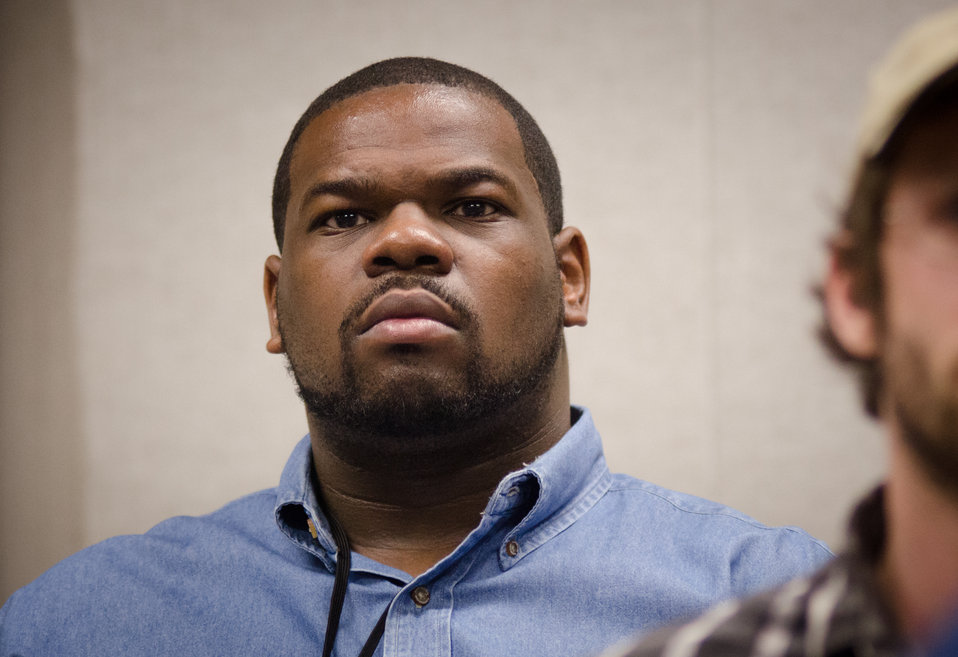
Staffers and farmers came together for the “Virginia State University (VSU), U.S. Department of Agriculture (USDA) and Virginia Farmers Working Together” outreach workshop in the VSU, L. Douglas Wilder building on Thursday, March 7, 2013, in Petersburg, VA. Farmers shared and learned new ways to do more with USDA services, and how to apply for programs that will help grow their business.